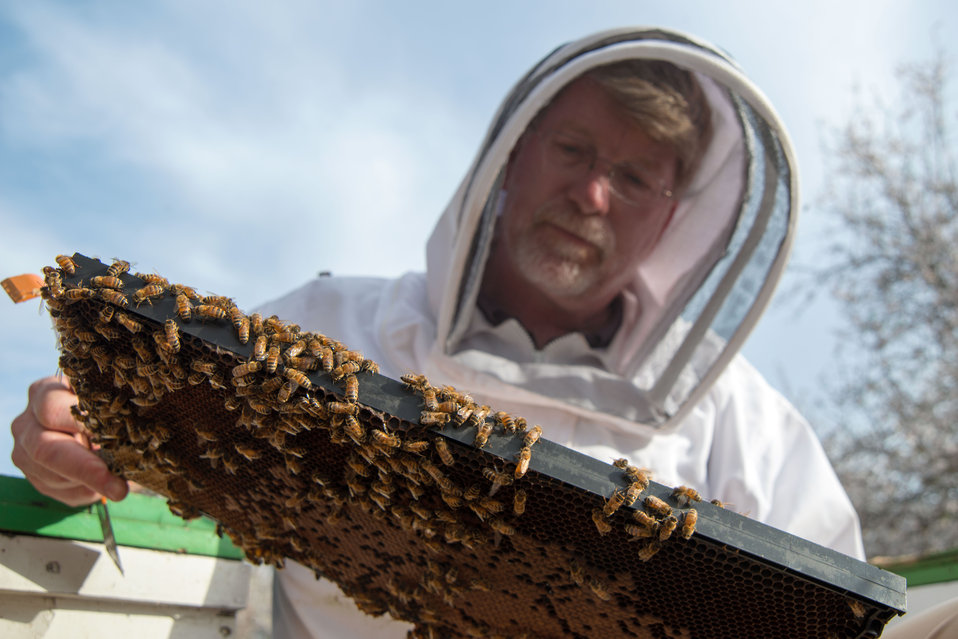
U.S. Department of Agriculture (USDA) Agricultural Research Service (ARS) entomologist Dr. Jeff Pettis examines a bee colony at Paramount Farms in McFarland, CA on , Feb. 25, 2014. Bees are one of nature’s many pollinators for flowers and crops and are crucial in production for fruits and vegetables. Some of the crops pollinated by bees are apples, squash, and almonds. Honeybees are responsible for pollinating approximately $15 billion worth of crops in the U. S. each year. The U. S. Department of Agriculture (USDA) Agricultural Research Service (ARS) and Natural Resource Conservation Service (NRCS) are working on ways to mitigate the decline of the bee population by coordinating pollination research, conservation, and education among USDA agencies and their partners.